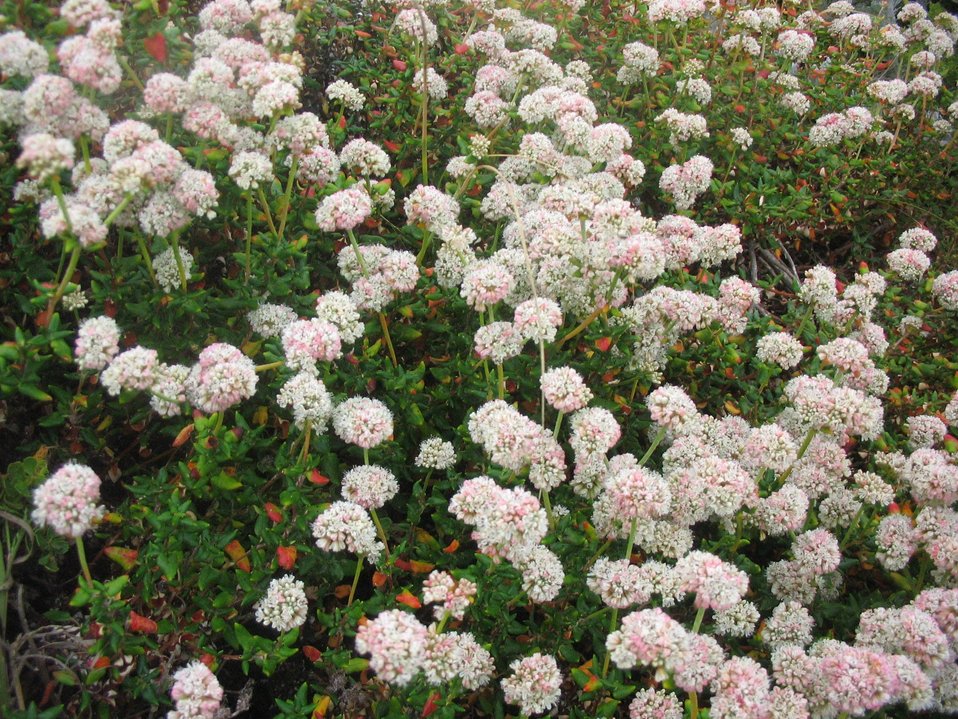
Dune buckwheat flowers (Eriogonum parvifolium)